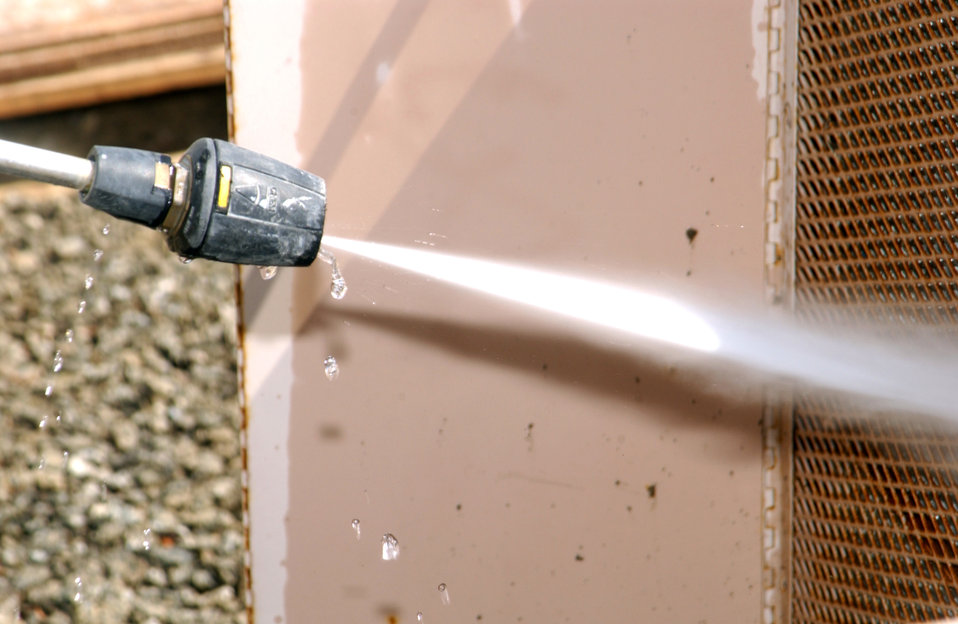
Keeping it cool

Senior Airman Robert George sprays the coils of an air-conditioning unit with water outside one of the dining facilities at this deployed location in Southwest Asia Oct. 11. The water rinses off hydrochloric acid used previously to clean sand, grit and debris from the unit's coils, which are much like that of an automobile radiator. There are better than 3,000 air-conditioning units at this base, which is home to about 1,500 Airmen and the 380th Air Expeditionary Wing. Airman George is assigned to the 380th Expeditionary Civil Engineer Squadron and deployed from Yokota Air Base, Japan.